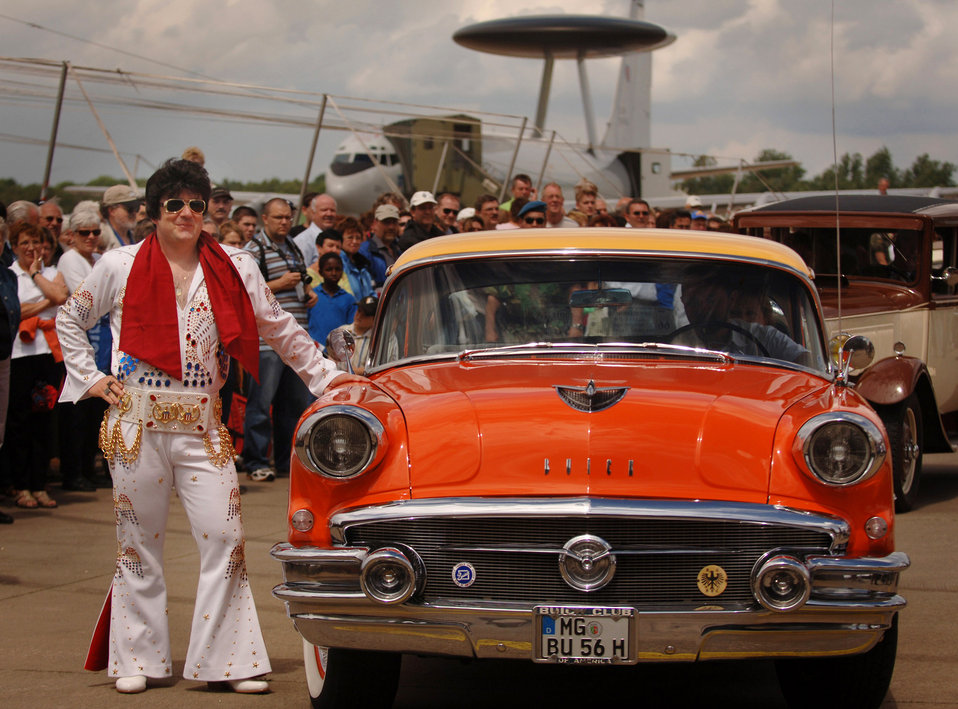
Elvis joins NATO celebration